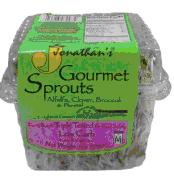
RECALLED - Sprouts

April 19, 2011 - Product Recall - Jonathans Sprouts Recalls Alfalfa Sprouts Because Of Possible Health Risk.